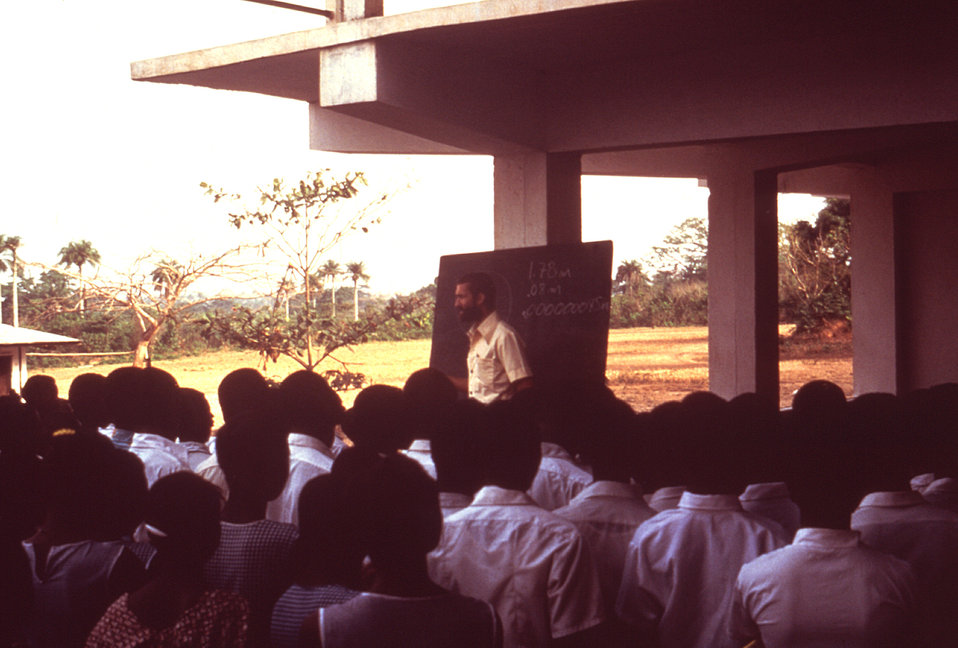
This was Dr. Bob Cannon as he lectured to Segbwema, Sierra Leone villagers on Lassa fever precautions and protocol.